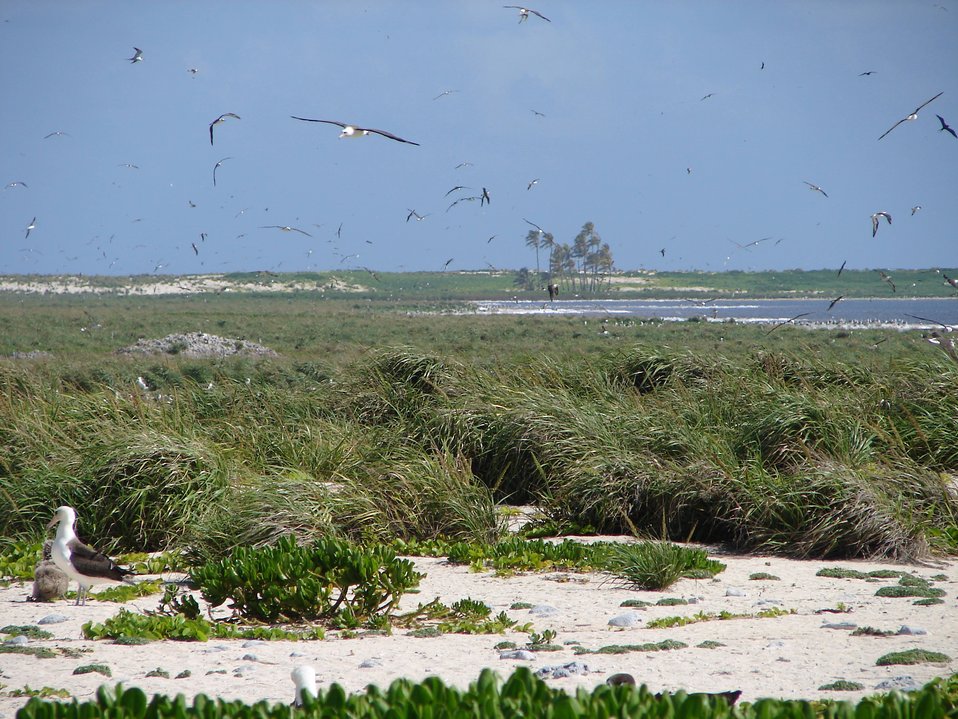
Laysan Island